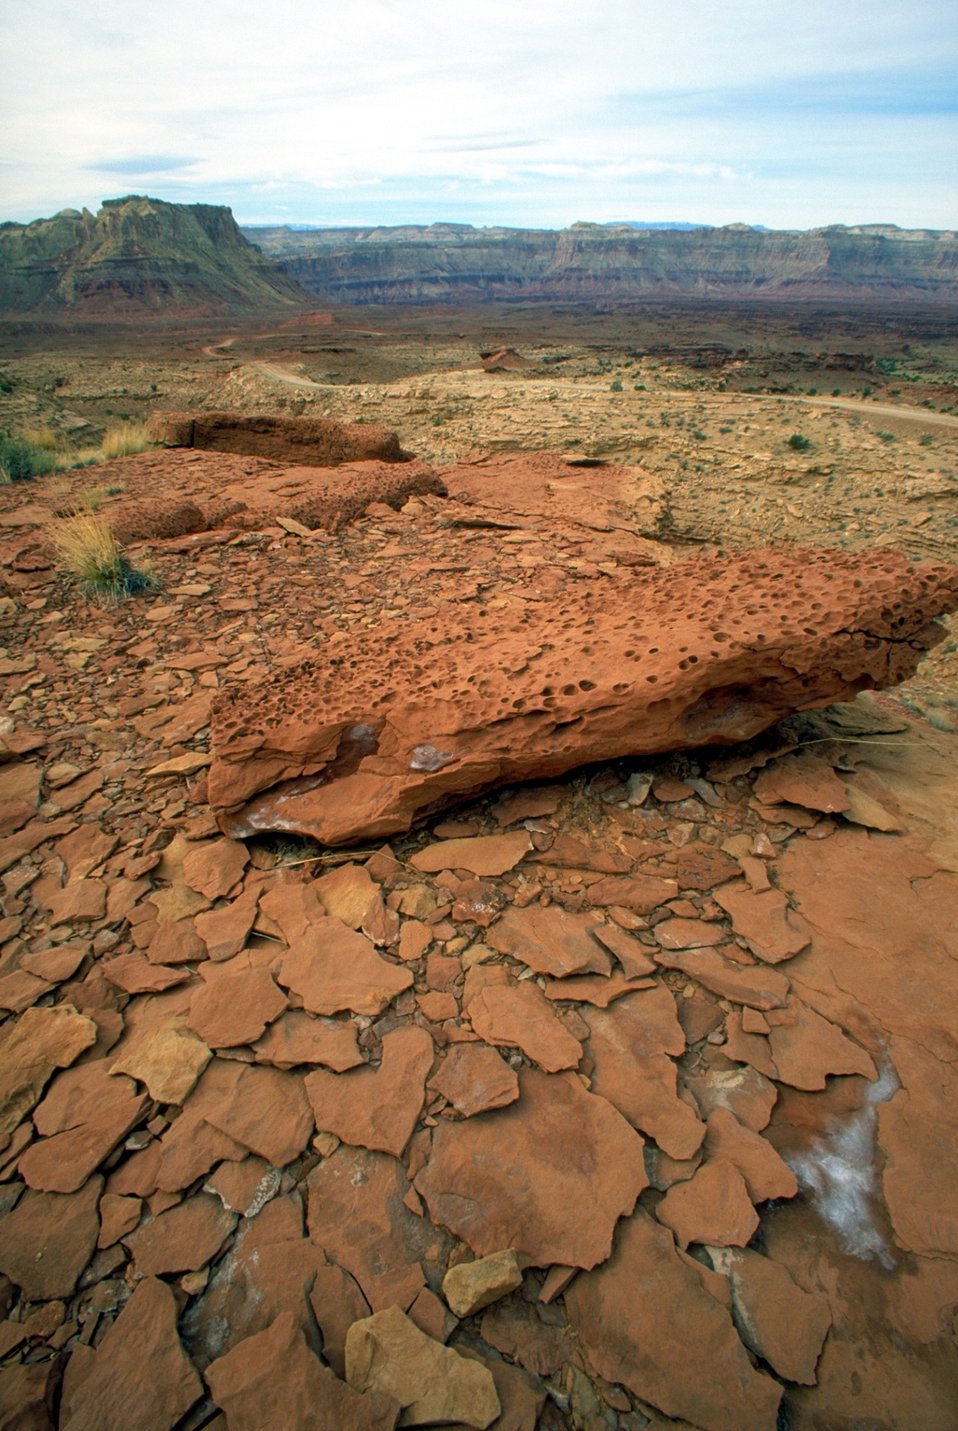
Red Canyon Loop, San Rafael Swell.